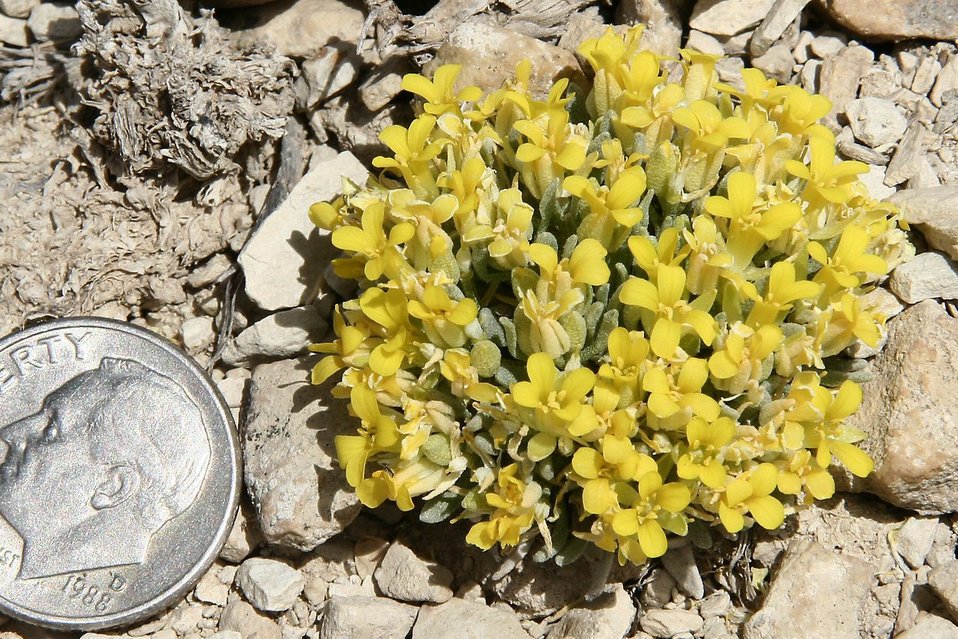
Dudley Bluffs Bladderpod Close-Up

A typical Dudley Bluffs bladderpod in full bloom during early May.

Photo credit: USFWS
...........................................................................

BACKGROUND:
The Dudley Bluffs bladderpod (bladderpod - Physaria congesta) and the Dudley Bluffs twinpod (twinpod - Physaria obcordata) are limited or endemic to barren white shale outcrops and specific soil tongues in the Piceance Basin of Rio Blanco County, Colorado. The bladderpod is known from eight populations, consisting of roughly 546,000 plants across an estimated 930 acres, while the twinpod is known from 11 populations, consisting of roughly 25,000 plants across an estimated 318 acres. Approximately 88% of the total occupied bladderpod and twinpod habitat occurs on public lands managed by the Bureau of Land Management. All known populations occur within a 20 square mile area.

When these two species were listed in 1990, natural gas drilling was not considered a threat. Previously considered inaccessible, these two species sit atop the nation’s biggest reservoir of natural gas. Fracturing technique advancements, however, have recently made these natural gas deposits accessible with 95 percent of the development near these rare plant populations. Rio Blanco County currently has over 2,600 natural gas wells, but predictions estimate there may be as many as 19,000 wells within 15 years, more than any other Colorado county. These wells and their associated infrastructure (pads, pipelines, roads, and traffic) are impacting populations and habitat of both the bladderpod and the twinpod. The Bureau of Land Management, the Colorado Natural Areas Program, the U.S. Fish and Wildlife Service (Service), and other partners have been working together to better document and study these impacts to the bladderpod and the twinpod.

Oftentimes management for rare plant species does not adequately consider impacts outside of the immediate area where a plant is found. For example, ecological effects from dust generated by heavy traffic on dirt or gravel roads can extend more than 300 feet from the road. Or, for every vehicle traveling one mile of unpaved roadway once a day, every day for a year, 2.5 tons of dust can be deposited. Effects to plants from dust can be numerous, including changes to a plant’s photosynthesis, respiration, transpiration, water use efficiency, leaf conductance, growth rate, plant vigor, and gas exchange rates. Changes to plant communities and species’ abundances within these communities have also been linked to dust deposition. Aside from dust, roads themselves alter ecosystems by importing invasive nonnative species, altering hydrology, and changing sedimentation patterns. In addition, both the twinpod and the bladderpod require pollinators for reproduction. Impacts to these solitary ground or twig nesting bees (especially their nesting habitats) may impact these species’ reproduction. We consider all of these effects to be part of “dispersed development” impacts. Our research hopes to address impacts to these two species, their associated plant communities and their pollinators. We are hopeful this research will allow land managers to better evaluate and address threats from this dispersed development.